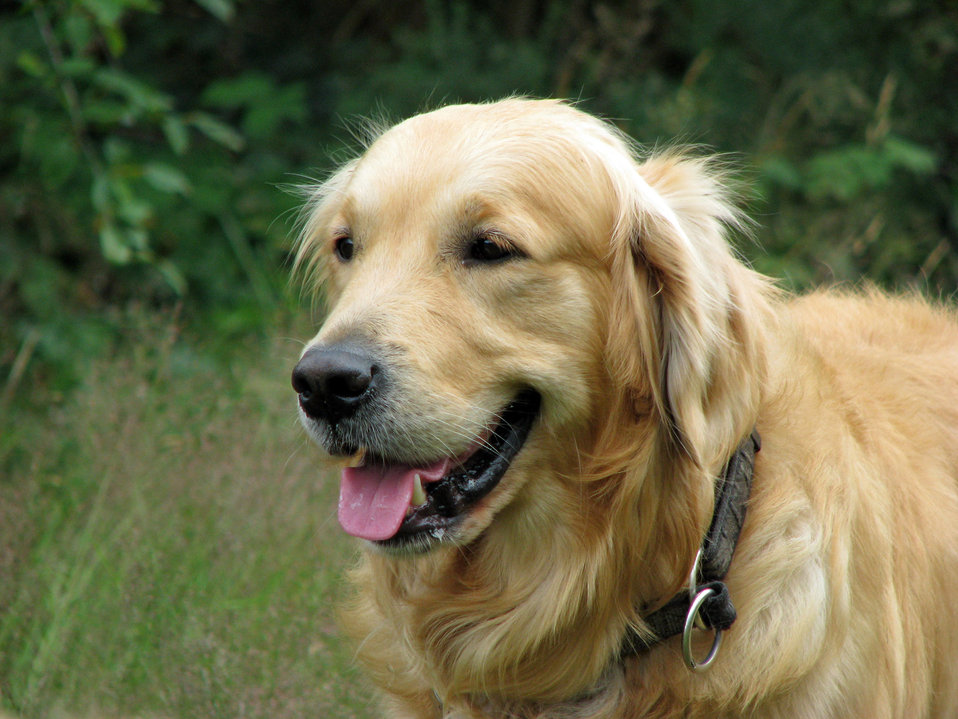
Golden retriever dog

Close-up portrait of a beautiful golden retriever dog.